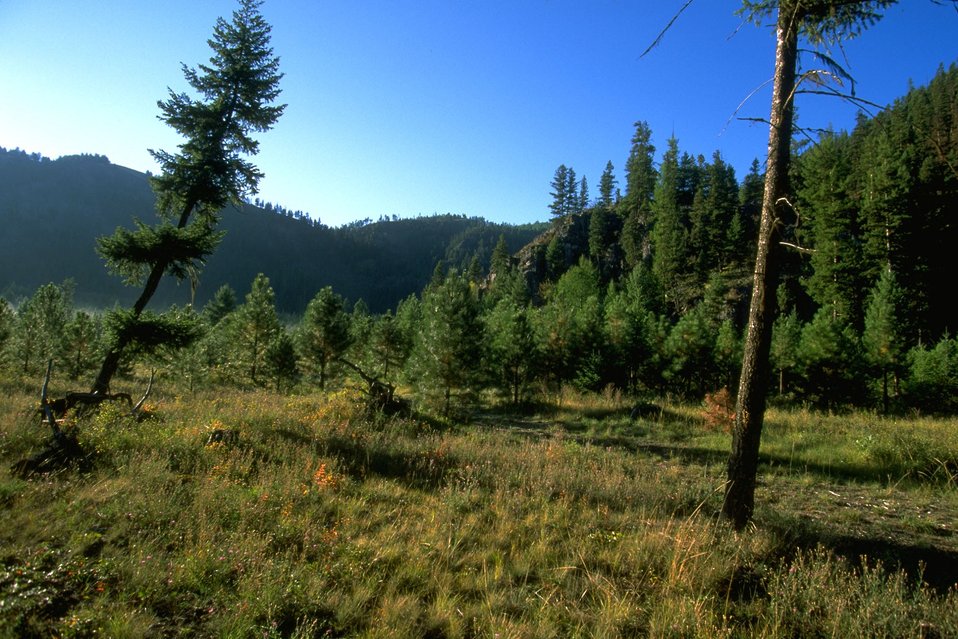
Daigles Eddy day-use area along the Blackfoot River